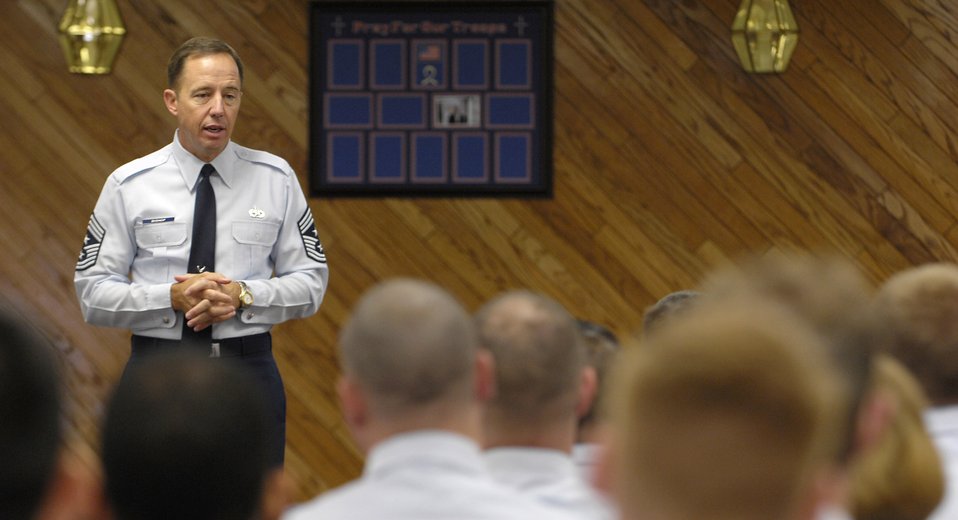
PACAF command chief speaks about road ahead

Chief Master Sergeant Anthony Bishop talks with Airman Leadership School and NCO Academy graduates May 16 at Elmendorf Air Force Base, Alaska. Chief Bishop is the command chief master sergeant for Pacific Air Forces.